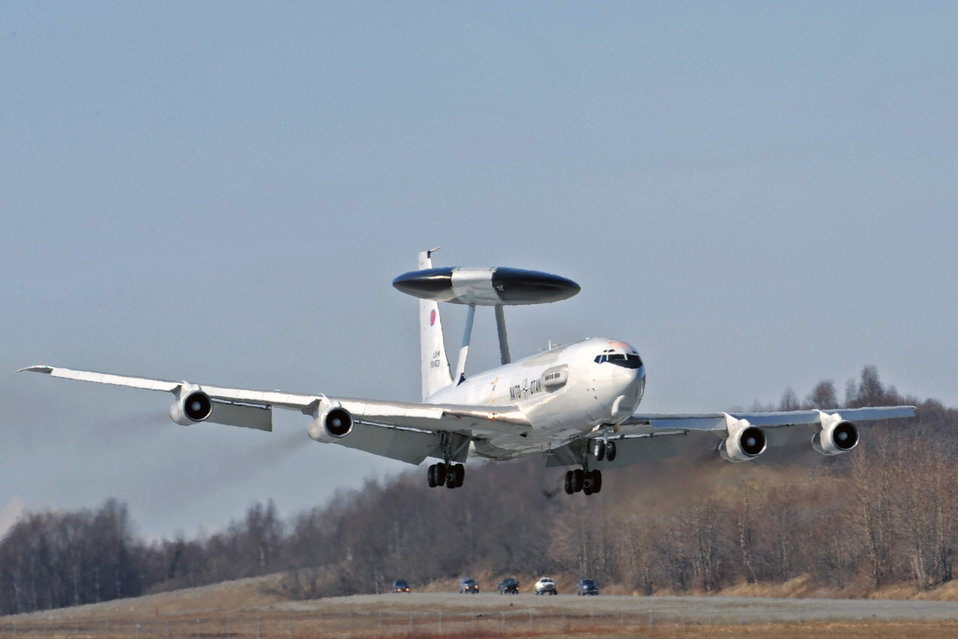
Red Flag-Alaska ends

ELMENDORF AIR FORCE BASE, Alaska -- An E-3 A NATO E-3 Airborne Warning and Control System prepares to touch the tarmac after participating in Red Flag-Alaska 2009 April 30 at Elmendorf Air Force Base, Alaska. This exercise enabled flying squadrons to enhance their fighting capabilities in simulated combat sorties in a realistic threat environment. The 10-day exercise ended May 1.